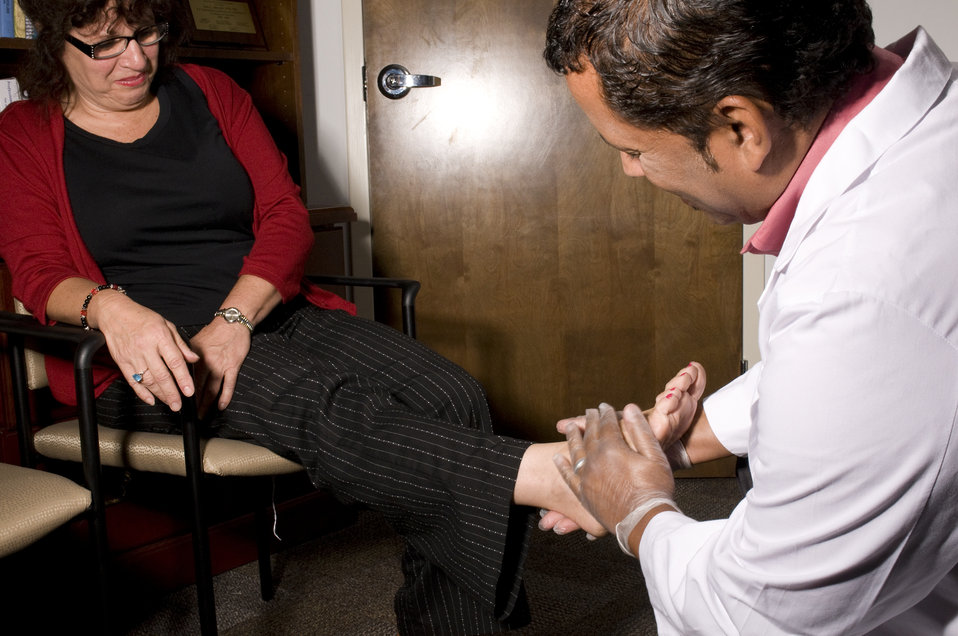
The healthcare practitioner depicted in this image was in the process of carrying out his assessment of the symptoms experienced by his female patient related to her diabetic condition. Here, we see the physician examining his patient's right foot.